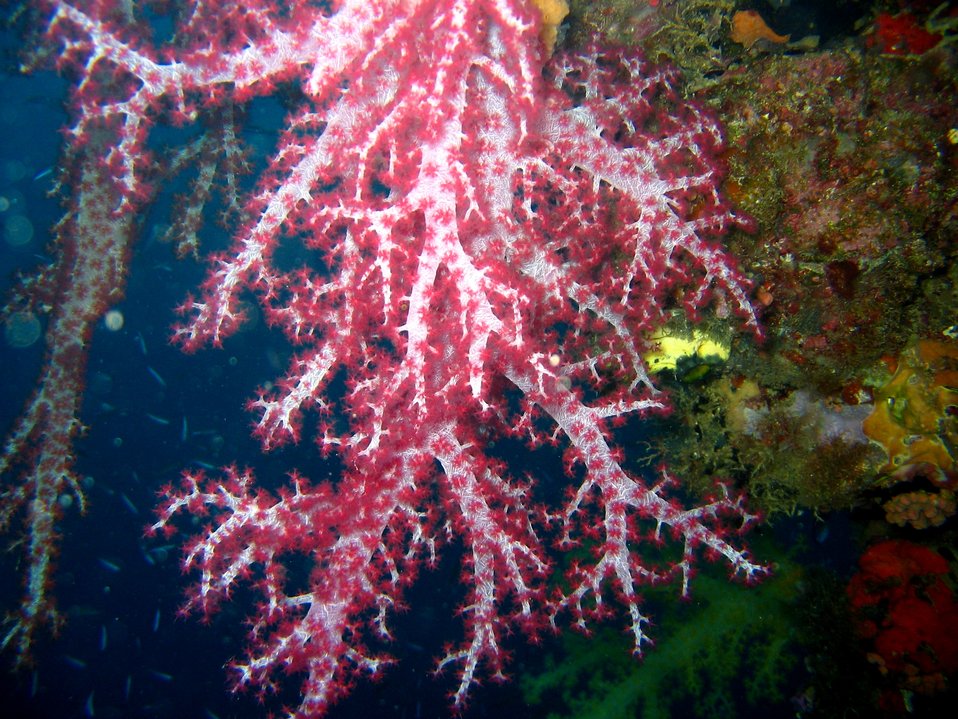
Soft corals (Dendronephthya sp.)